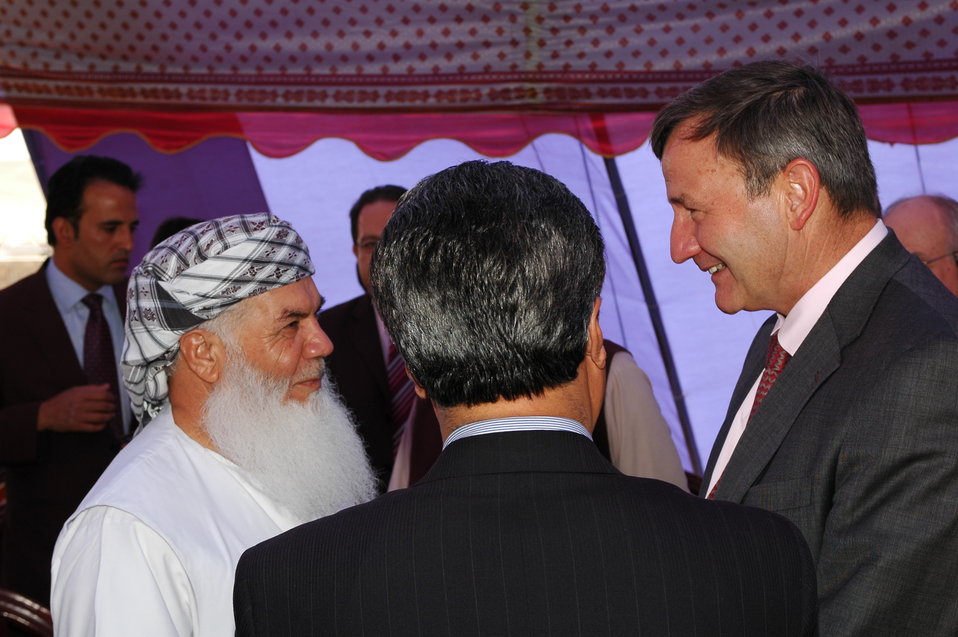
105 MW Tarakhil Power Plant Handover